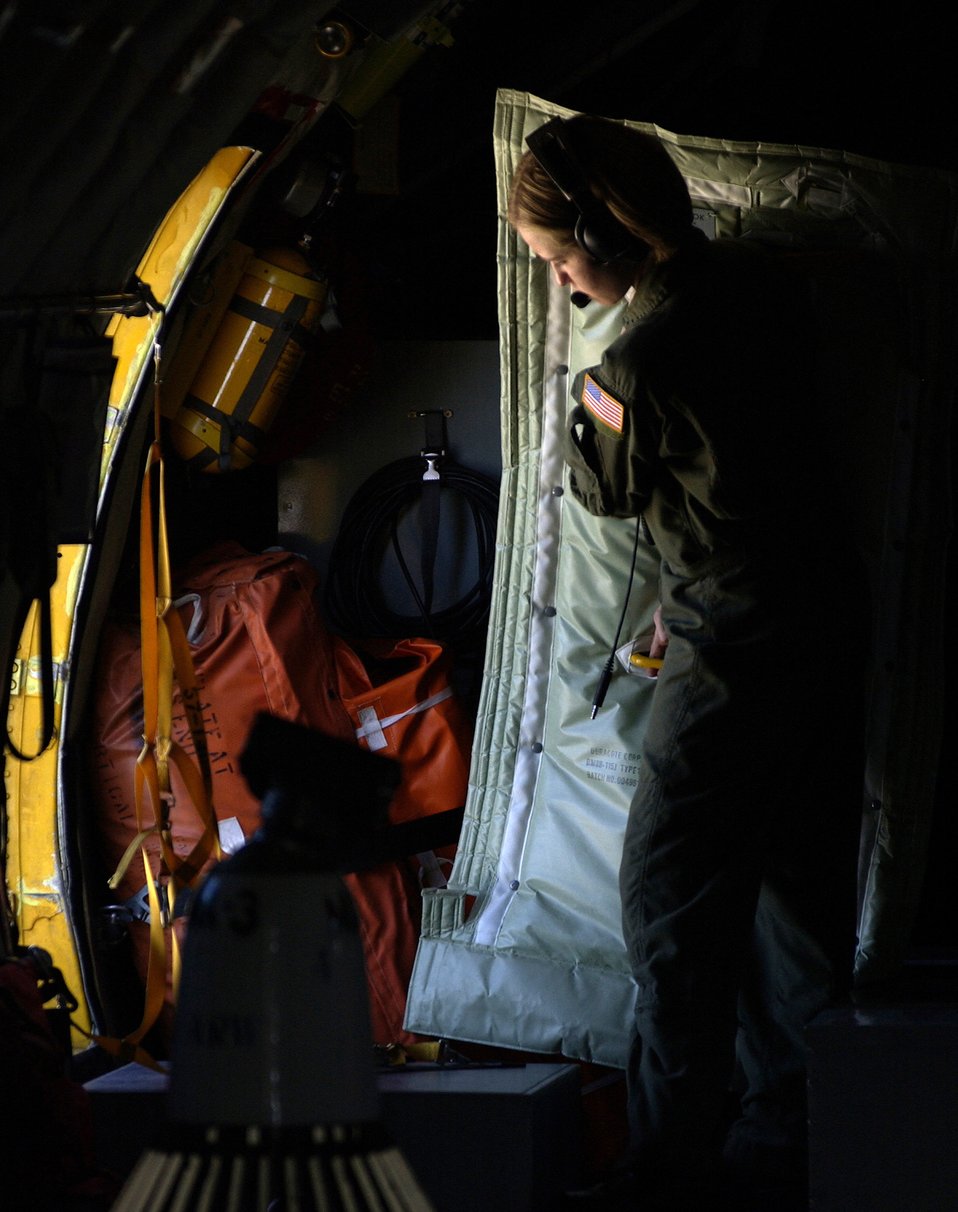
Airmen hone skills at Red Flag

Senior Airman Kelly Nichols closes the bay door on a KC-135 Stratotanker Oct. 19 during Red Flag 07-1 at Nellis Air Force Base, Nev. Airman Nichols is a boom operator with the 92nd Air Refueling Squadron at Fairchild AFB, Wash.